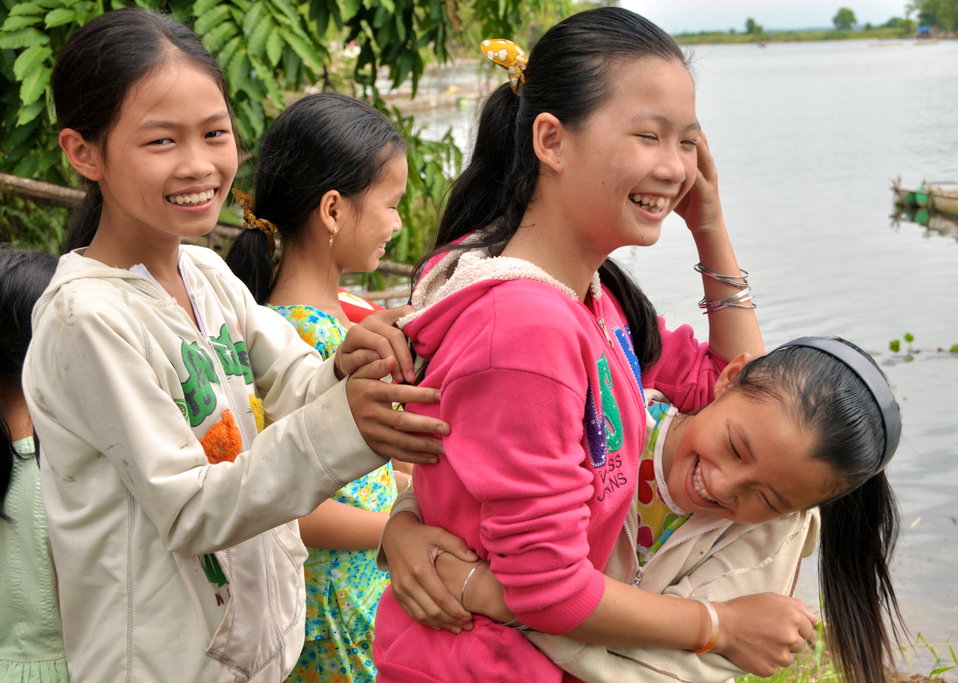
USAID supports community evacuation drill and emergency preparedness in central Vietnam

Loc An Commune, Phu Loc District, Thua Thien Hue Province
December 4, 2012, Photo: Richard Nyberg, @USAIDVietnam